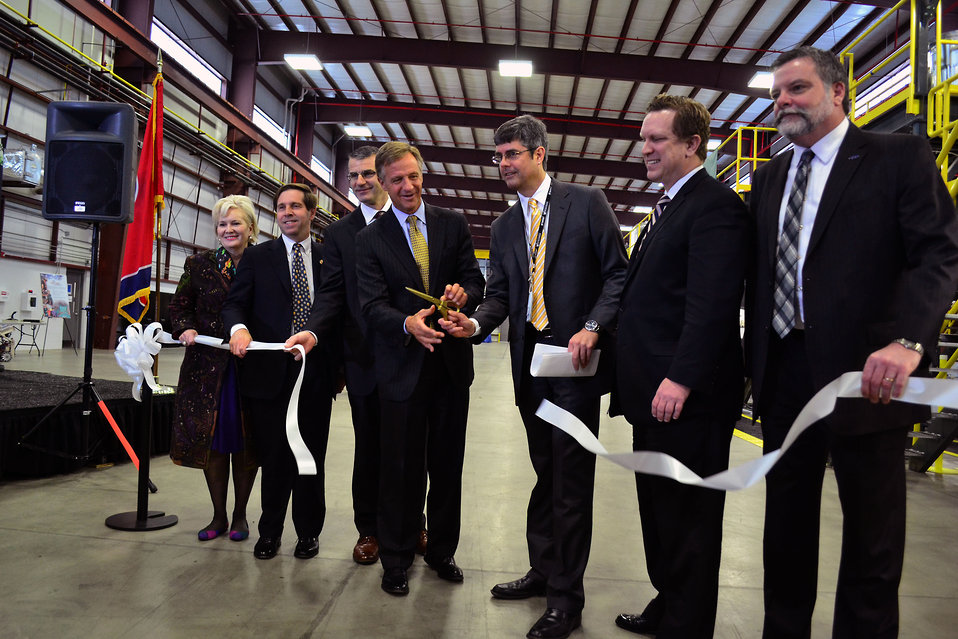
Carbon Fiber Technology Facilty Open House Oak Ridge Tennessee

13-025 DOE photo Lynn Freeny